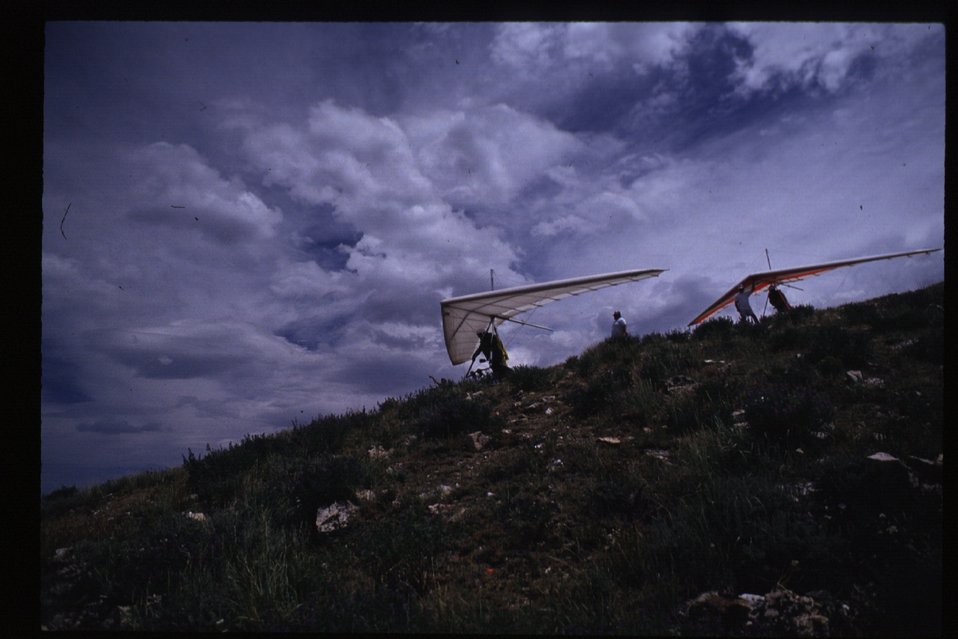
Hang Gliders on King Mountain Arco Idaho Idaho Falls Field Office USRD Upper Snake River District